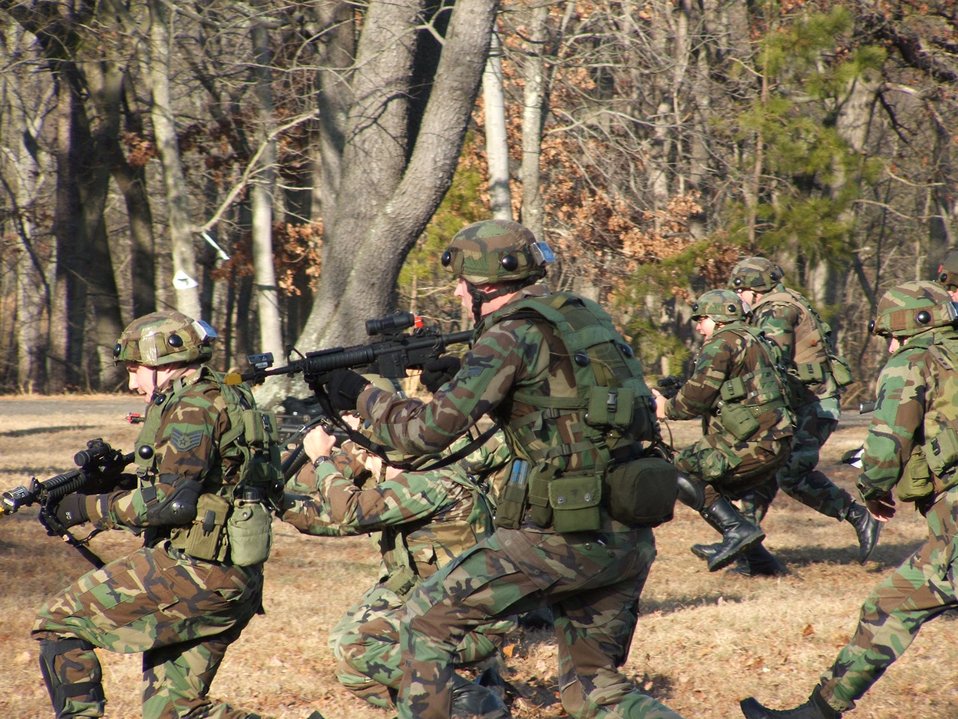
AIR FORCE INTEGRATED CONTINGENCY SKILLS TRAINING COURSE 06-1 AT FORT DIX

FORT DIX, N.J. (AFPN) -- Airmen in the Air Force Integrated Contingency Skills Training Course practice tactical movement here Jan. 12. More than 100 students from multiple career fields participate in the course. The course is directed and taught by the Air Mobility Warfare Center's 421st Combat Training Squadron.